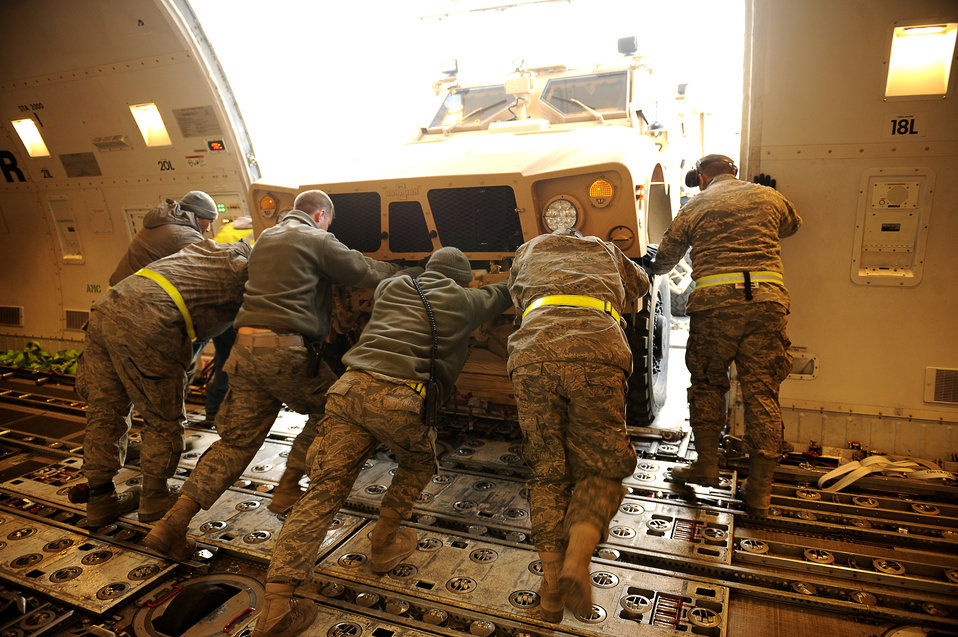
Moving the goods

Airmen push a mine-resistant, ambush-protected all-terrain vehicle out of an aircraft Jan. 13, 2010 at Bagram Airfield, Afghanistan. The M-ATV is the latest combat vehicle used by U.S. combat forces. The Airmen are assigned to the from the 455th Expeditionary Aerial Port Squadron.